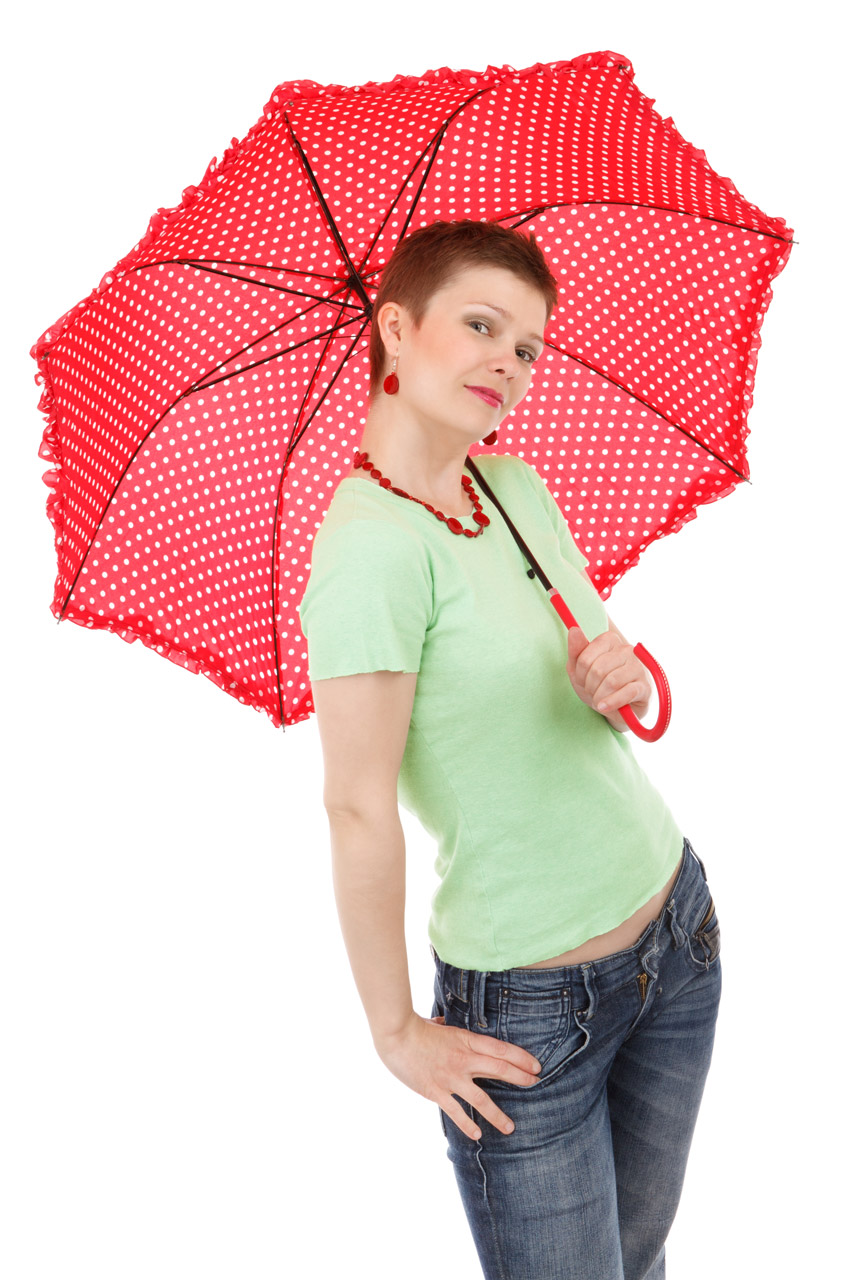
Woman and red umbrella

Young woman posing with a red umbrella isolated on white background.